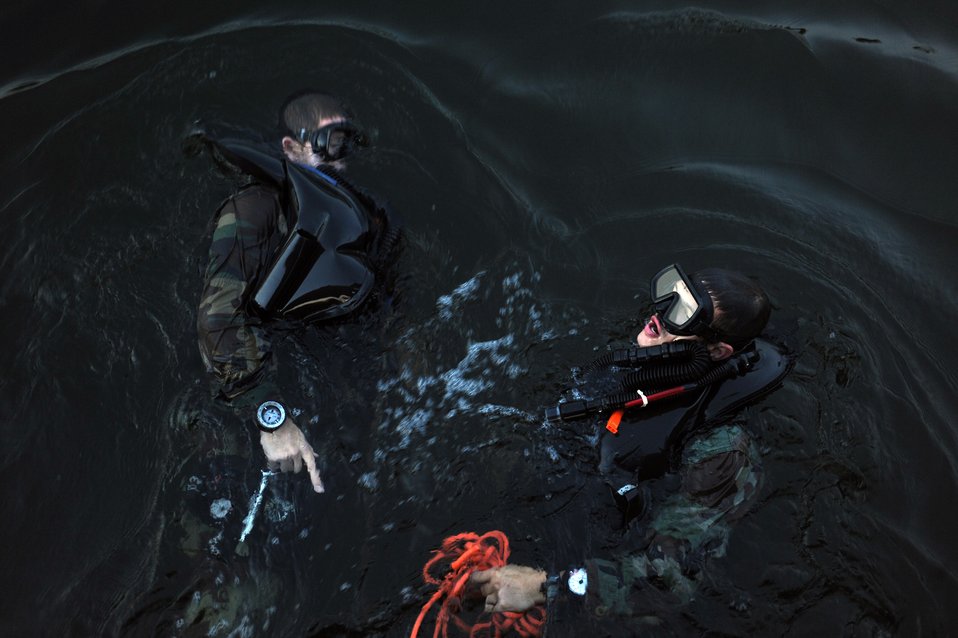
Combat Controllers

Airmen swim in pairs during an early morning dive during their combat dive course June 10, 2010, at Panama City Beach, Fla. The Airmen are combat controllers-in-training assigned to the 342nd Training Squadron Det. 2.